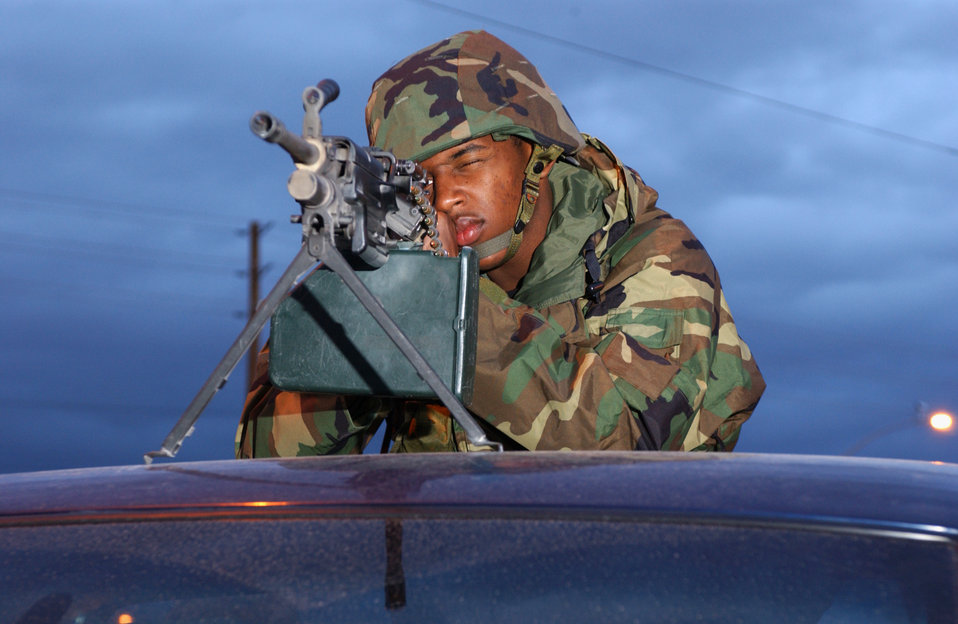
Providing protection

NELLIS AIR FORCE BASE, Nev. -- Airman Franklin Travis protects the front gate with an M-249 machine gun during an operational readiness inspection here Oct. 20. The ORI will evaluate of the wing's ability to prepare and deploy personnel, equipment and support assets to a combat environment. Airman Travis is assigned to the 99th Security Forces Squadron.